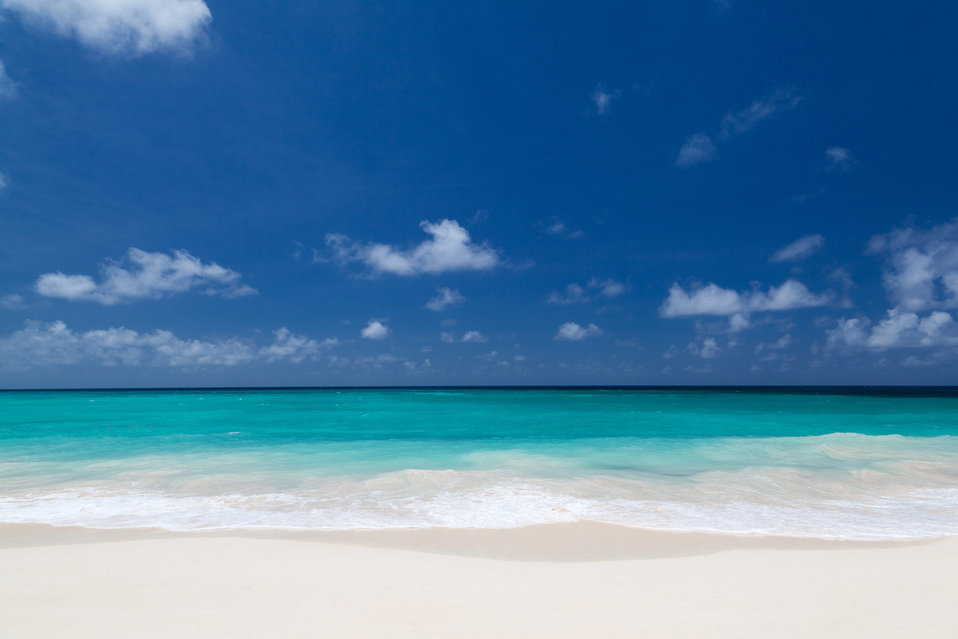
White beach and blue sky wallpaper image.